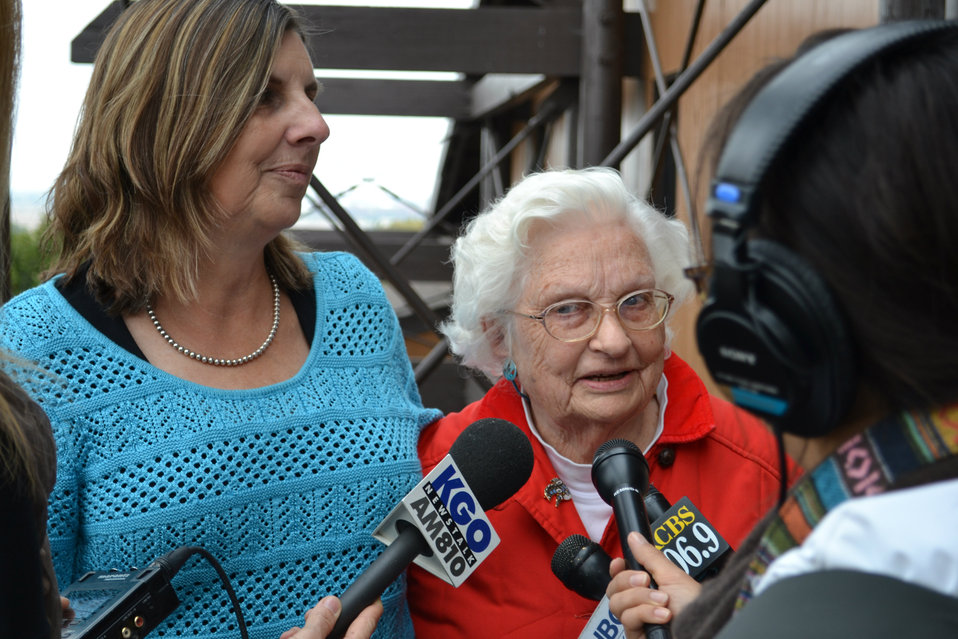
Cay Goude, Florence LaRiviere & media, TMRP, 11-14-13

Photo credit: Doug Cordell/USFWS

Florence LaRiviere shares the history of local support for the plan.

The U.S. Fish and Wildlife Service was joined by the California Department of Fish and Wildlife, the Coastal Conservancy, and many other environmental organizations active in the Bay Area to celebrate the finalization of the Recovery Plan for Tidal Marsh Ecosystems in Northern and Central California.